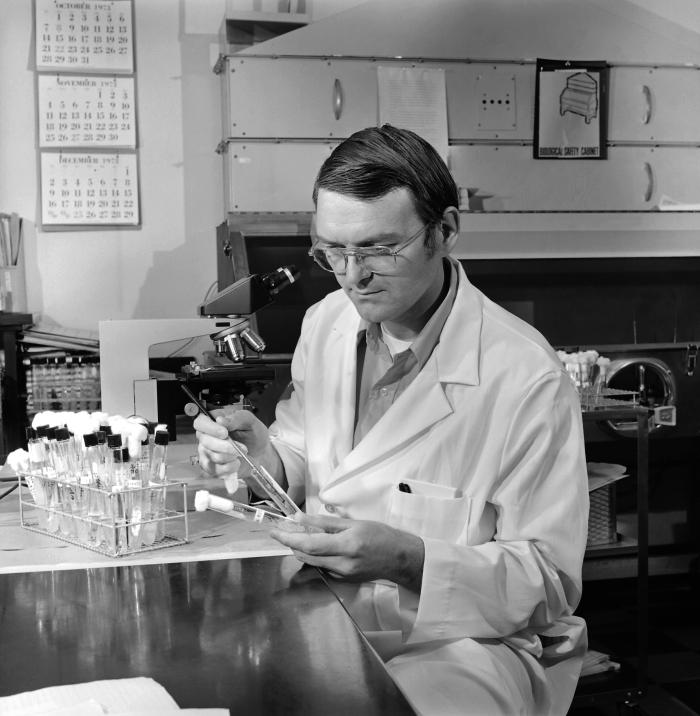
This historic 1973 image depicted Dr. Michael McGinnis seated in his mycology laboratory, while he was in the process of transferring a culture.